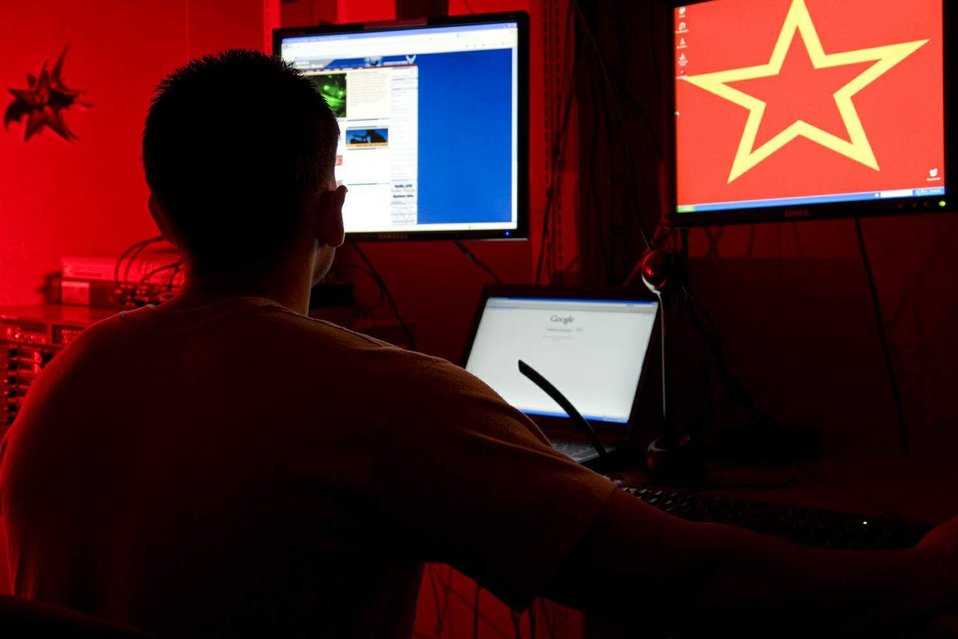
Aggressors prowl for Air Force information

An Adversary Network Technician from the 57th Information Aggressor Squadron at Nellis Air Force Base, Nev., uses open source information to gain knowledge about potential information operation targets.